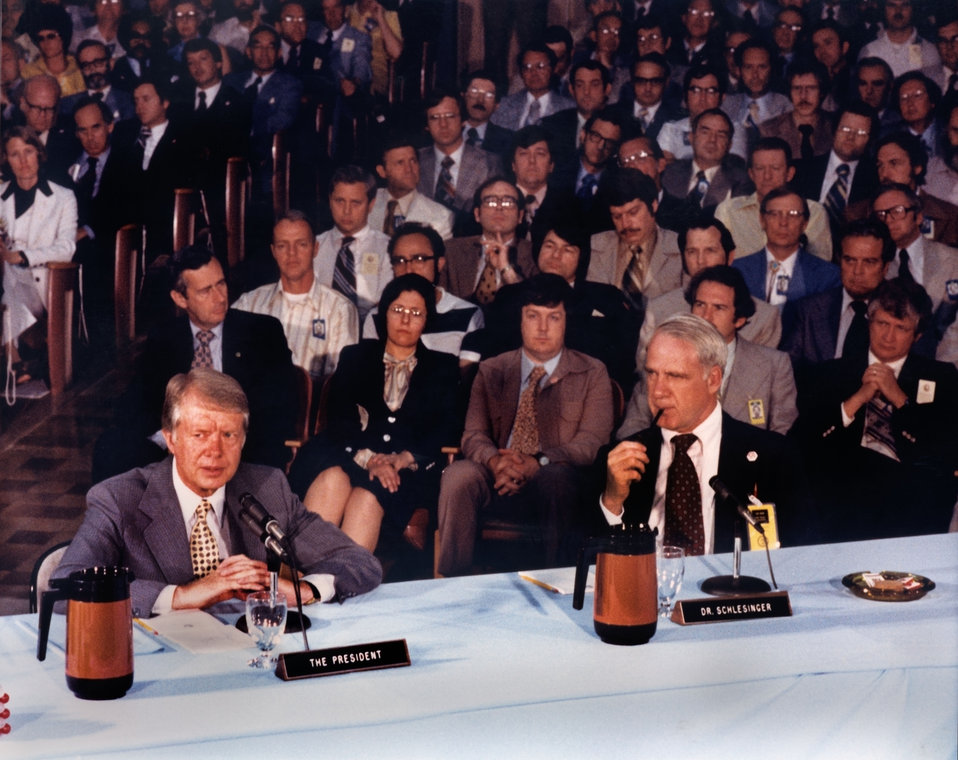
President Jimmy Carter and Secretary of Energy James Schlesinger in meeting in Oak Ridge

78-339 DOE photo by Frank Hoffman

President Jimmy Carter and Secretary of Energy James Schlesinger in meeting in Oak Ridge Tennessee 5-22-1978